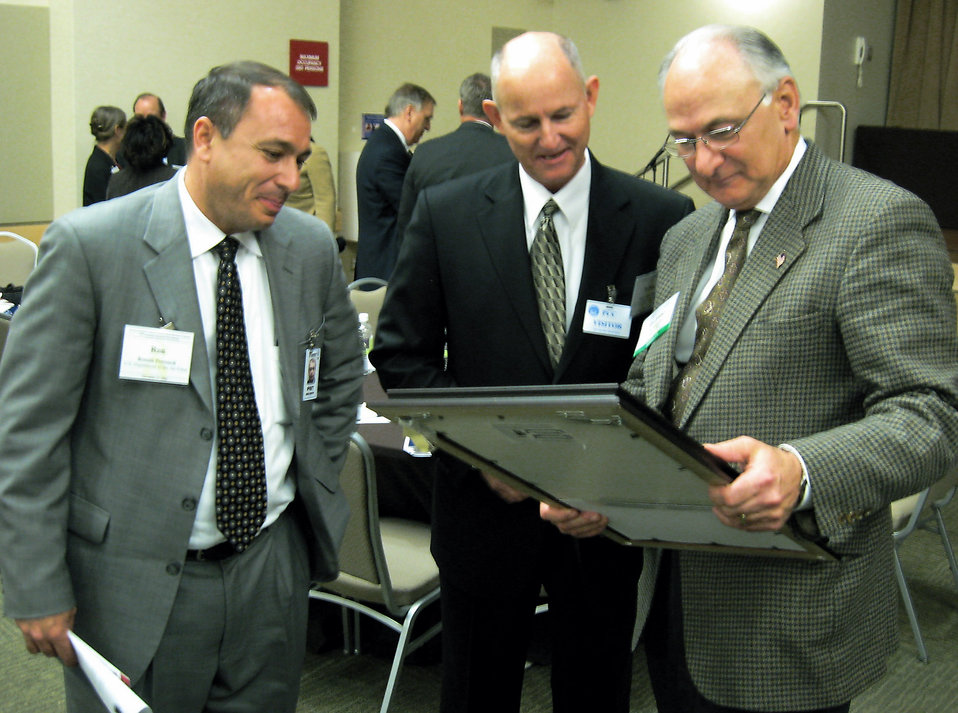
Small business specialist recognized with DOD award

James I. Finley, deputy under secretary of defense for acquisition and technology, admires the Golden Talon Award which was presented to Nelson Escribano (center), small business specialist at the 6th Air Mobility Wing, MacDill Air Force Base, Fla., during the 2nd Annual Service-Disabled Veteran-Owned Small Business Awards Ceremony. At left is Ronald A. Poussard, the director of the Secretary of the Air Force Small Business Programs. The ceremony was held at the Pentagon Conference Center Nov. 17.